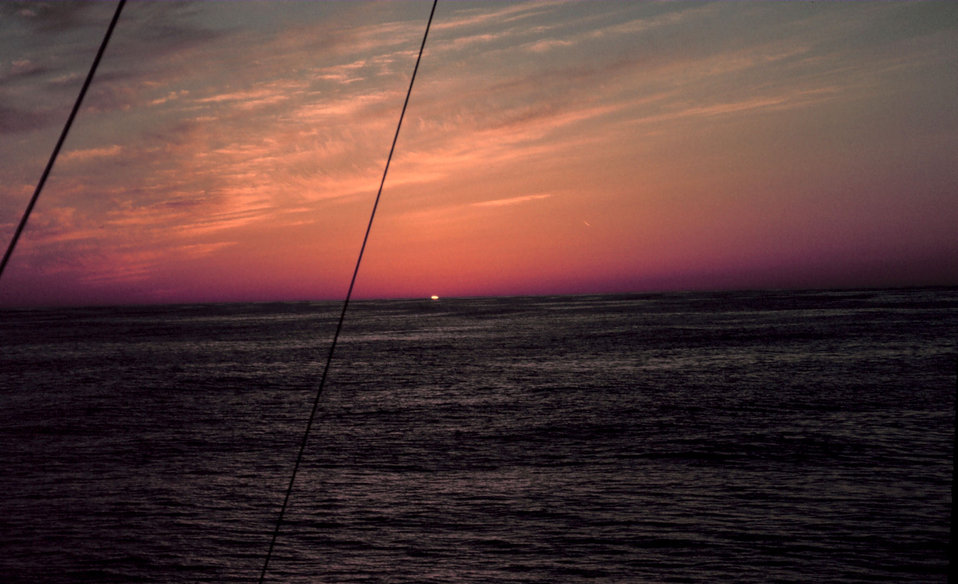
Swells from a far-away storm are apparent on the sea's surface as the sun disappears below the horizon.